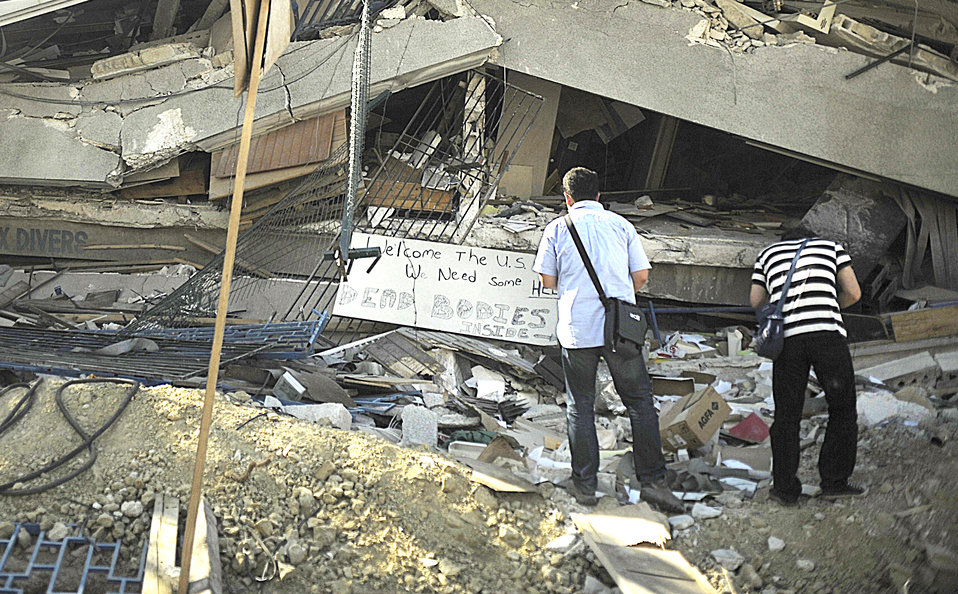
Relief efforts in Haiti

Destroyed buildings in Port-au-Prince, Haiti, have notices on them asking for help removing dead bodies Jan. 18, 2010. Port-au-Prince was devastated by an earthquake on Jan. 12, 2010.